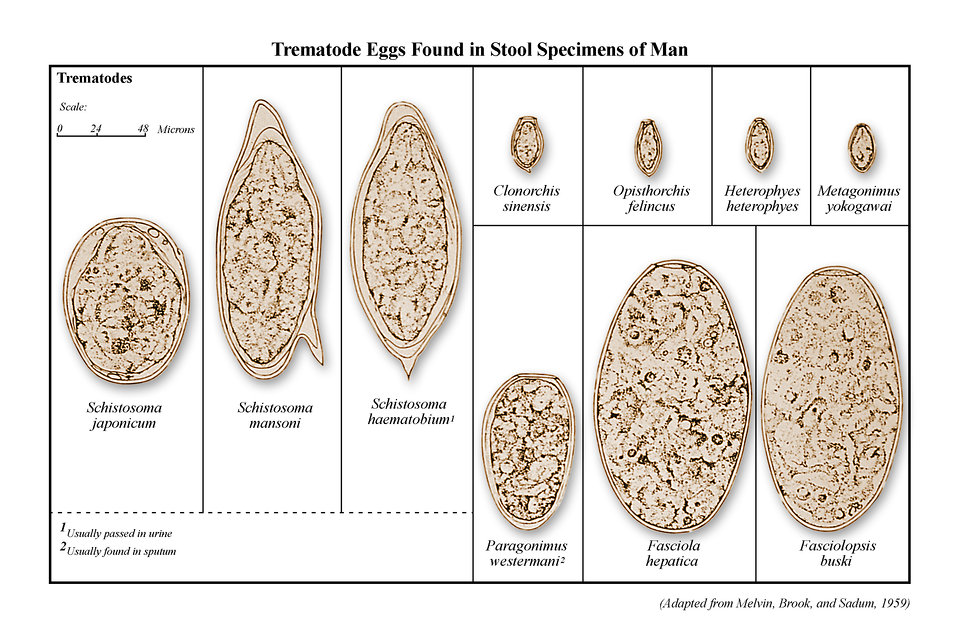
This illustration depicts a number of trematode species eggs, which have been found in human stool specimens. Trematodes are members of the class, Trematoda, within the phylum, Platyhelminthes, or flatworms, also known as parasitic flukes.